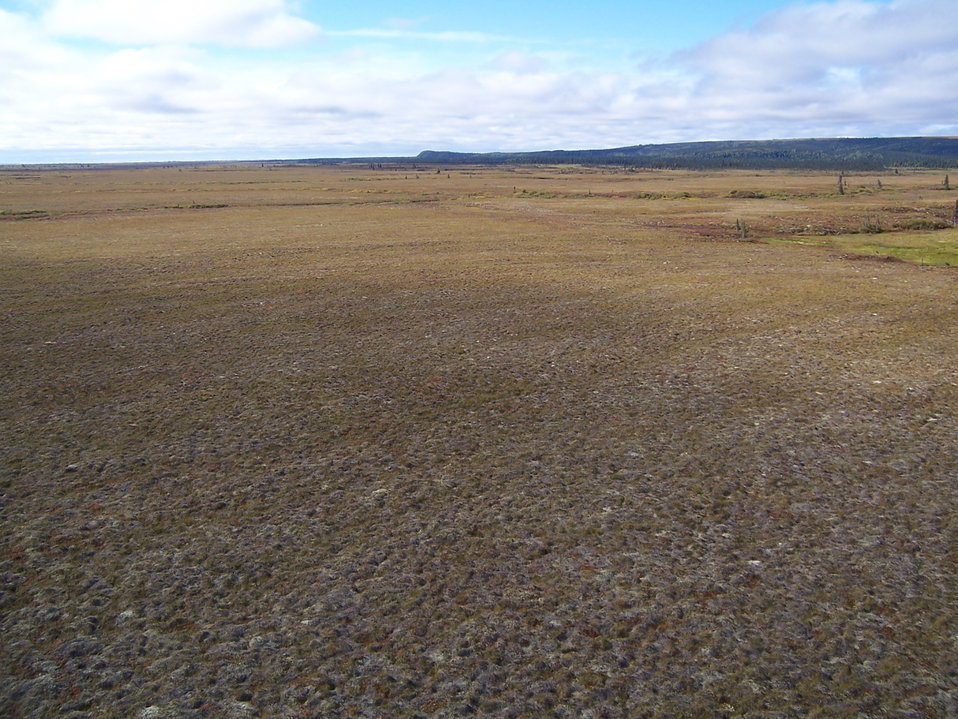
Tundra landscape

Yukon Delta NWR
This photo was taken during a ducks unlimited vegetation survey.
Photo Credit: Fred Broerman
Public Domain Image